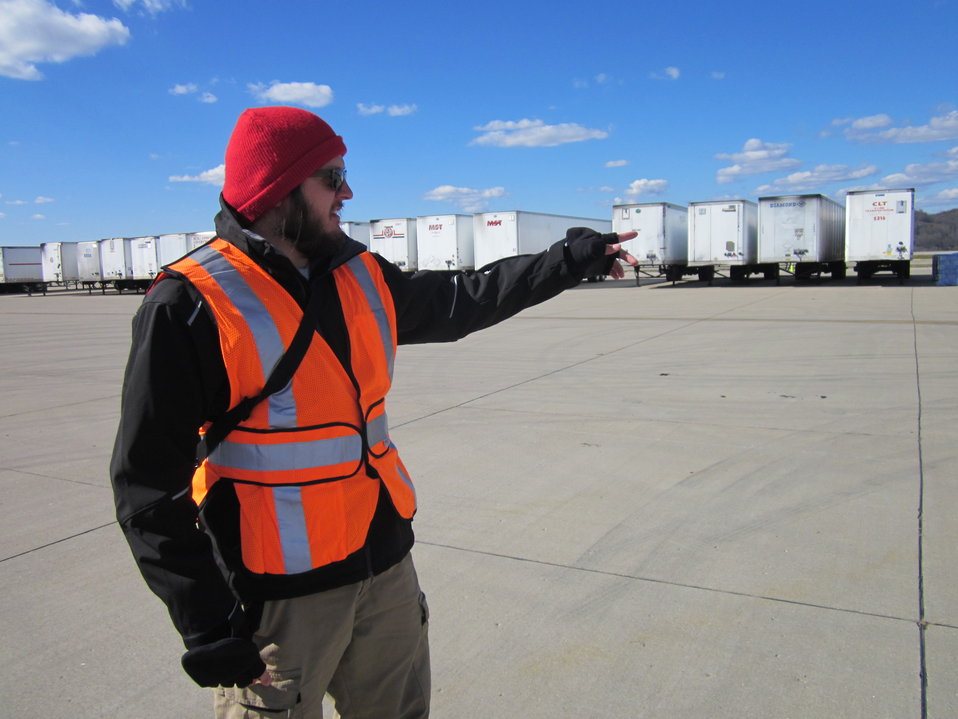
Logistical Staging Area

Charleston, WV, Nov. 2, 2012: Josh O'Connor, Division Supervisor of the Southern Area Red Type 1 Incident Management Team points to trailers of storm relief supplies at a Logistical Staging Area at Yeager Airport. O'Connor was on a FEMA assignment with the team. Food, water, generators and other supplies were collected and distributed by the National Guard for storm victims. About 700 pallets of water and 300 pallets of food were distributed.O'Connor is a fire management specialist at the Atlanta, Georgia Regional Office of the U.S. Fish and Wildlife.